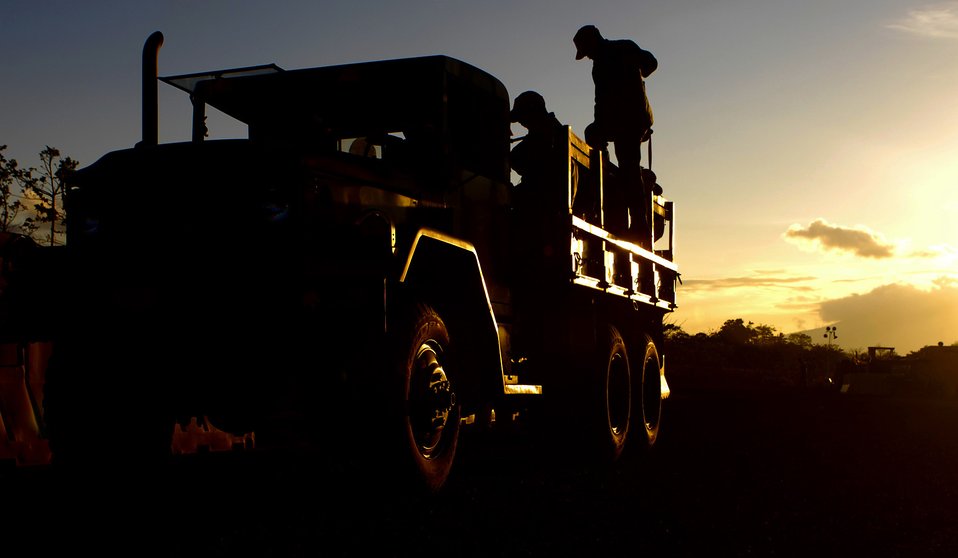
Off we go

Airmen from the 820th Expeditionary Red Horse Squadron at Nellis Air Force Base, Nev., board a two-ton truck March 31 in Buena Vista, Nicaragua, shortly before departing for a clinic construction site during New Horizons-Nicaragua 2007.